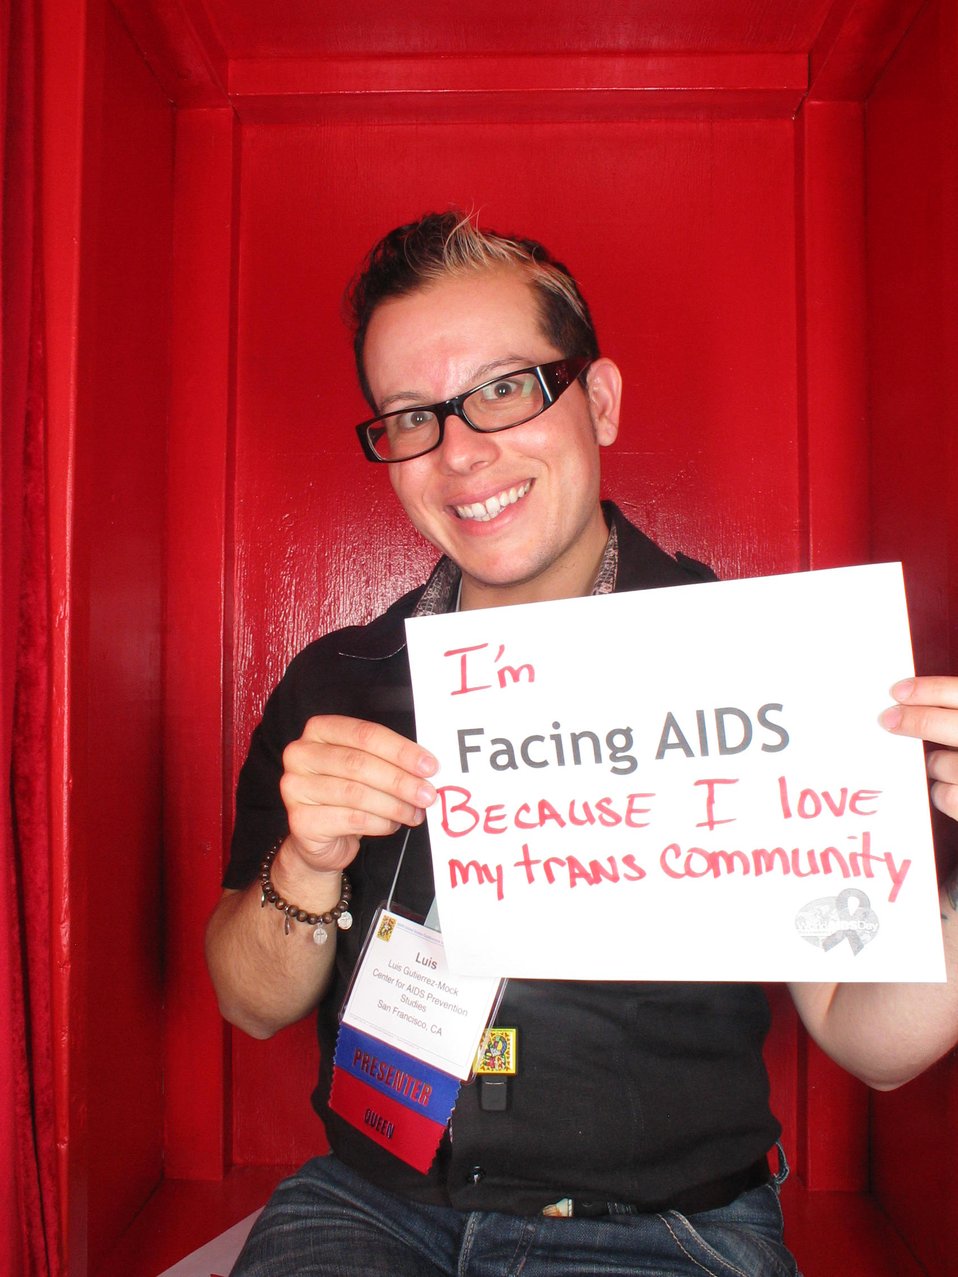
I'm Facing AIDS because I love my trans community.